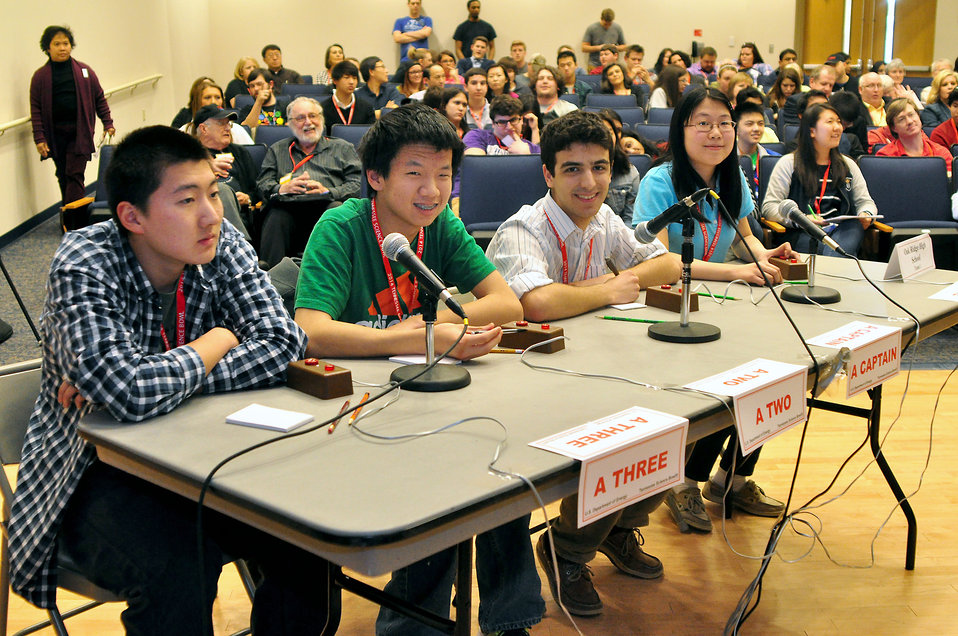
Oak Ridge HS 2014 TN DOE Science Bowl

DOE photo Lynn Freeny 2-22-2014 Pellissippi State Blount Campus